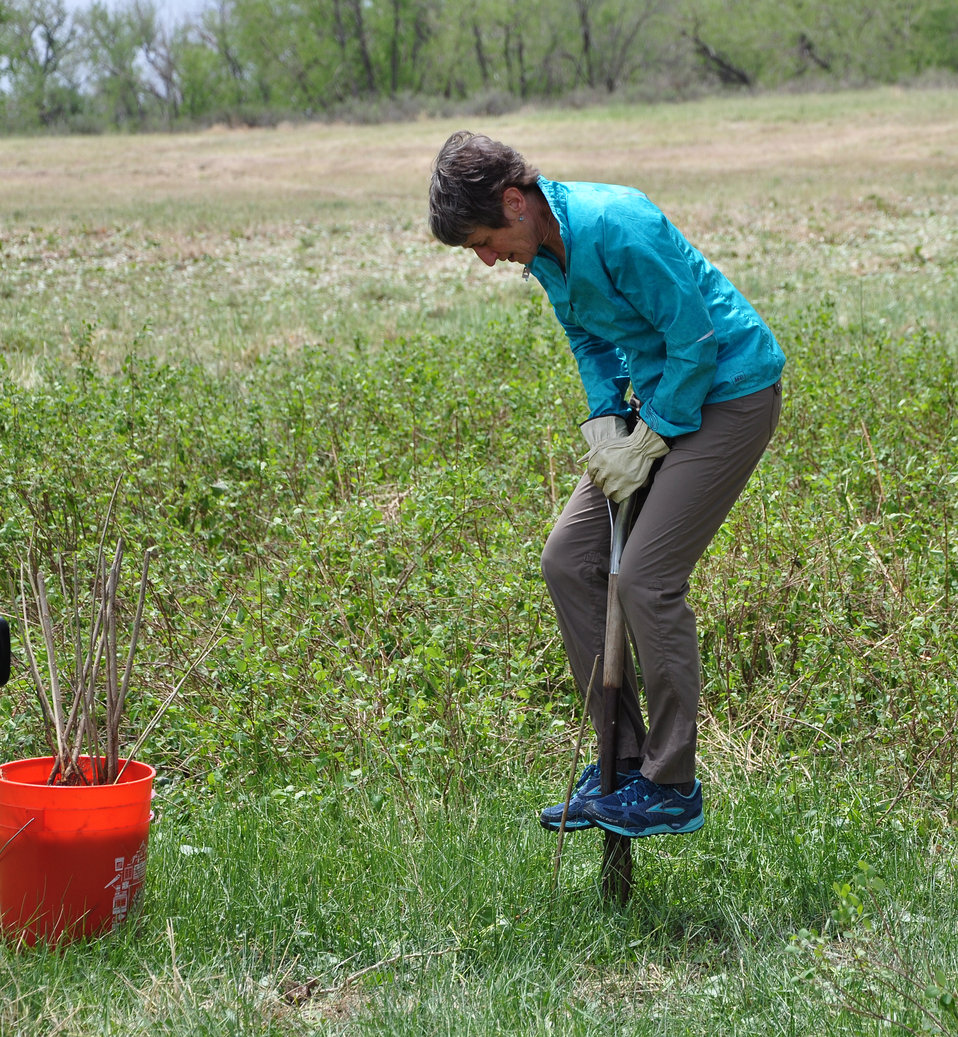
Secretary Jewell Digging a Hole for a Cottonwood Tree